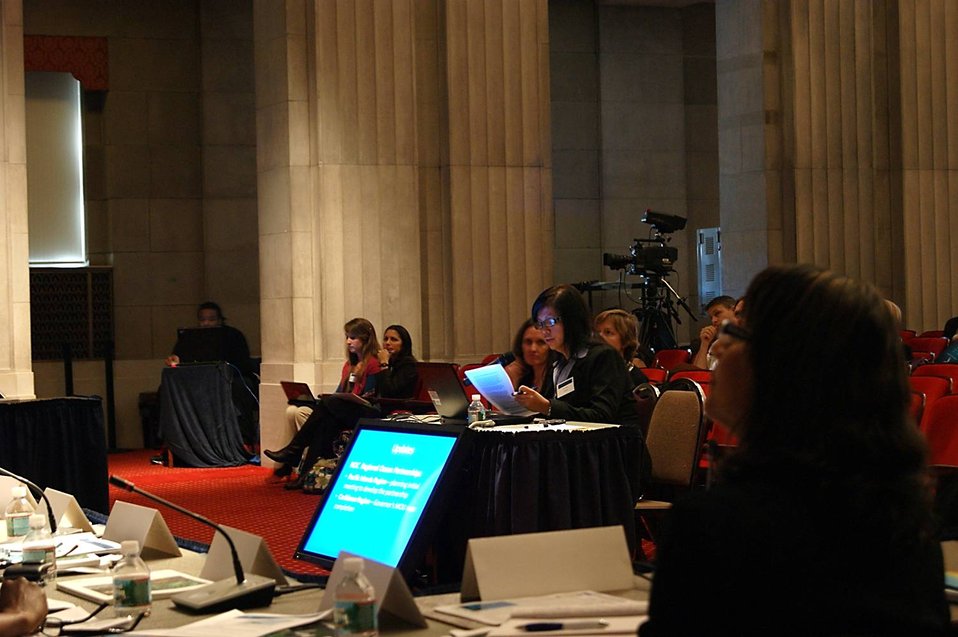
Coral Reef Task Force - Winter Meeting 2012